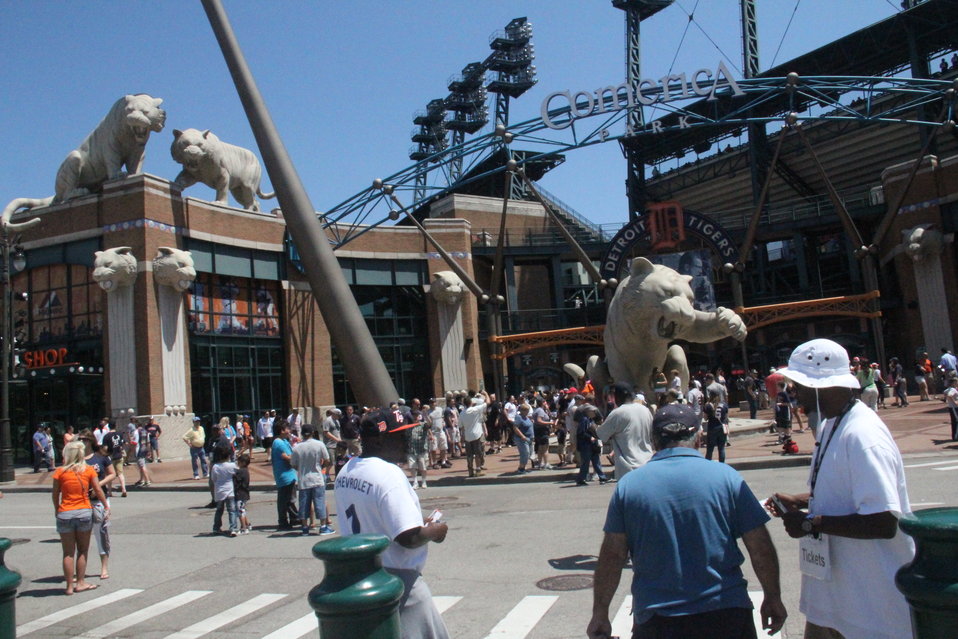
Tiger Statues at Detroit Tiger's Stadium